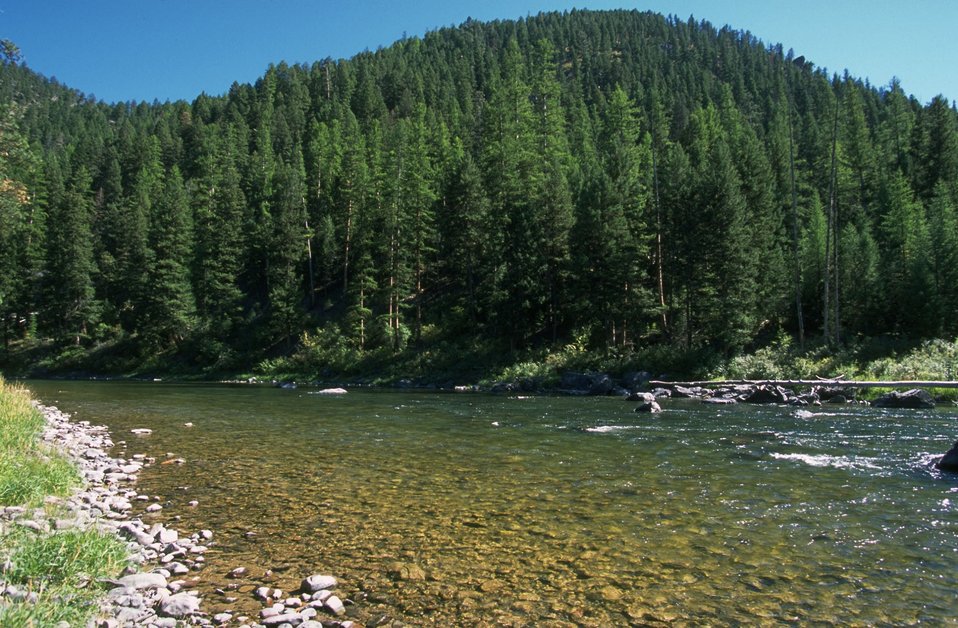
Scenic shot of Blackfoot River